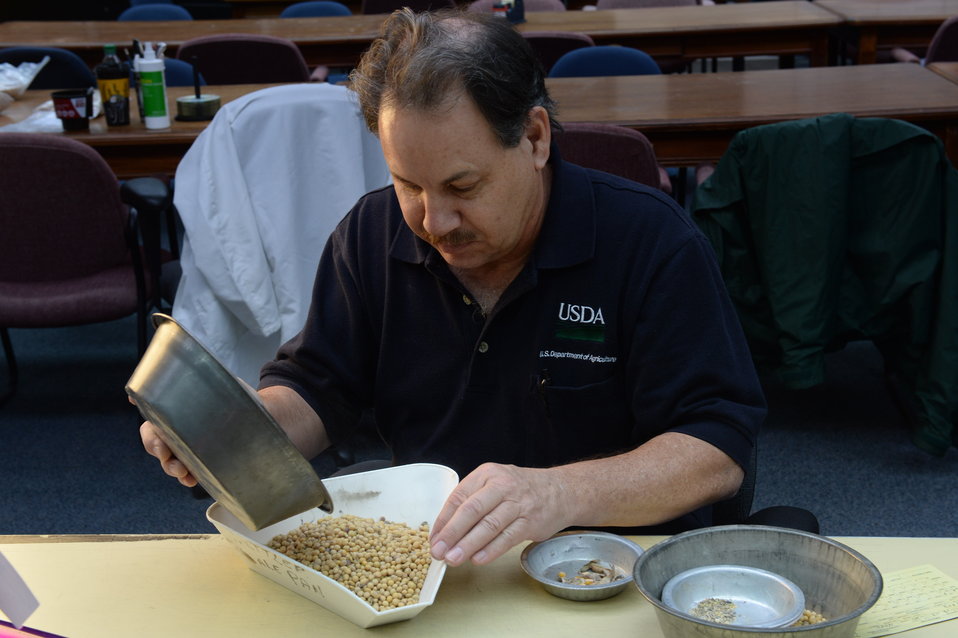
U.S. Department of Agriculture (USDA) Grain Inspection, Packers and Stockyards Administration (GIPSA) Federal Grain Inspection Service (FGIS) employee examines grain samples at the FGIS inspection laboratory in New Orleans, LA on Monday, Nov. 18, 2013.